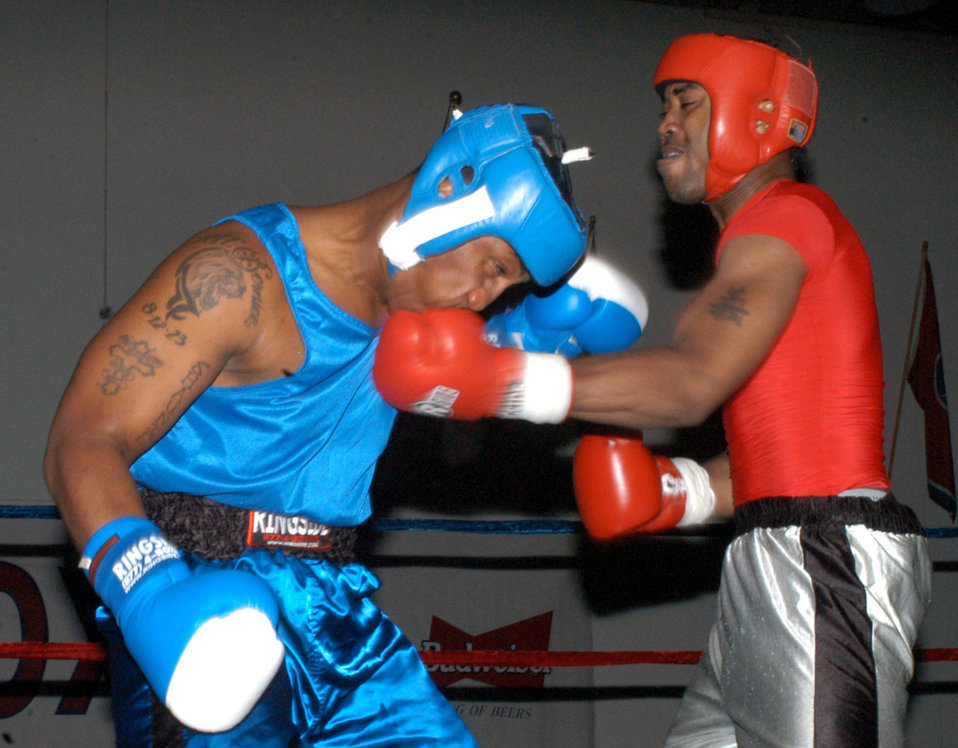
Airmen, Soldiers compete during boxing tourney

Kunsan Air Base's Devin Goodnoe matches a right jab from U.S. Army Garrison Casey's Elzavon Maxie during the 2007 summer Smoker Boxing Tournament Aug. 11 at USAG Humphreys. Maxie's larger arms couldn't trump his slower speed, giving Goodnoe the advantage in the third for the win.